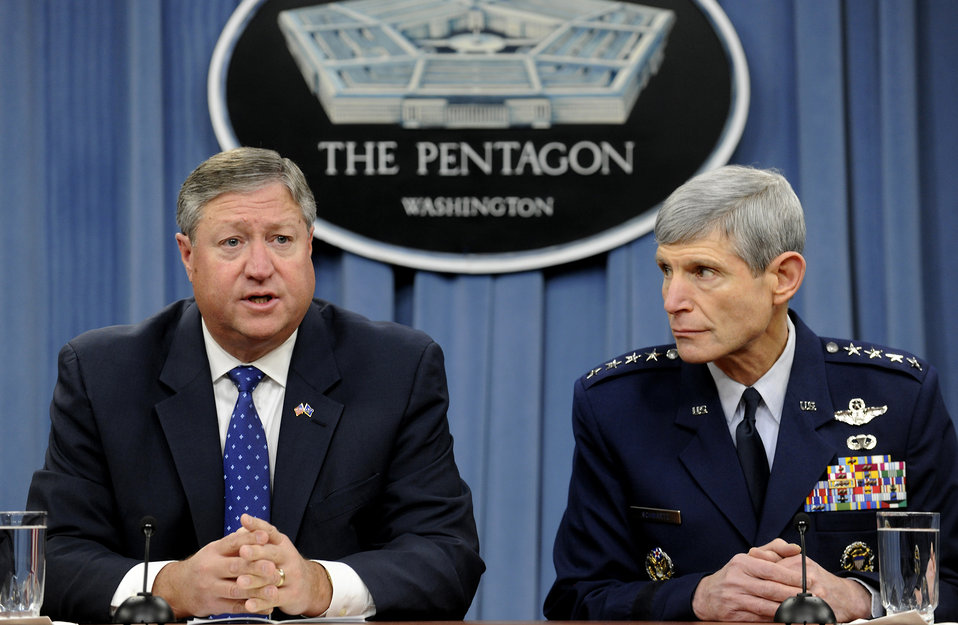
AF Force Structure Overview

Secretary of the Air Force Michael Donley and Air Force Chief of Staff Gen. Norton Schwartz explain the Air Force's Force Structure overview during a Pentagon press briefing on Feb. 3, 2012.